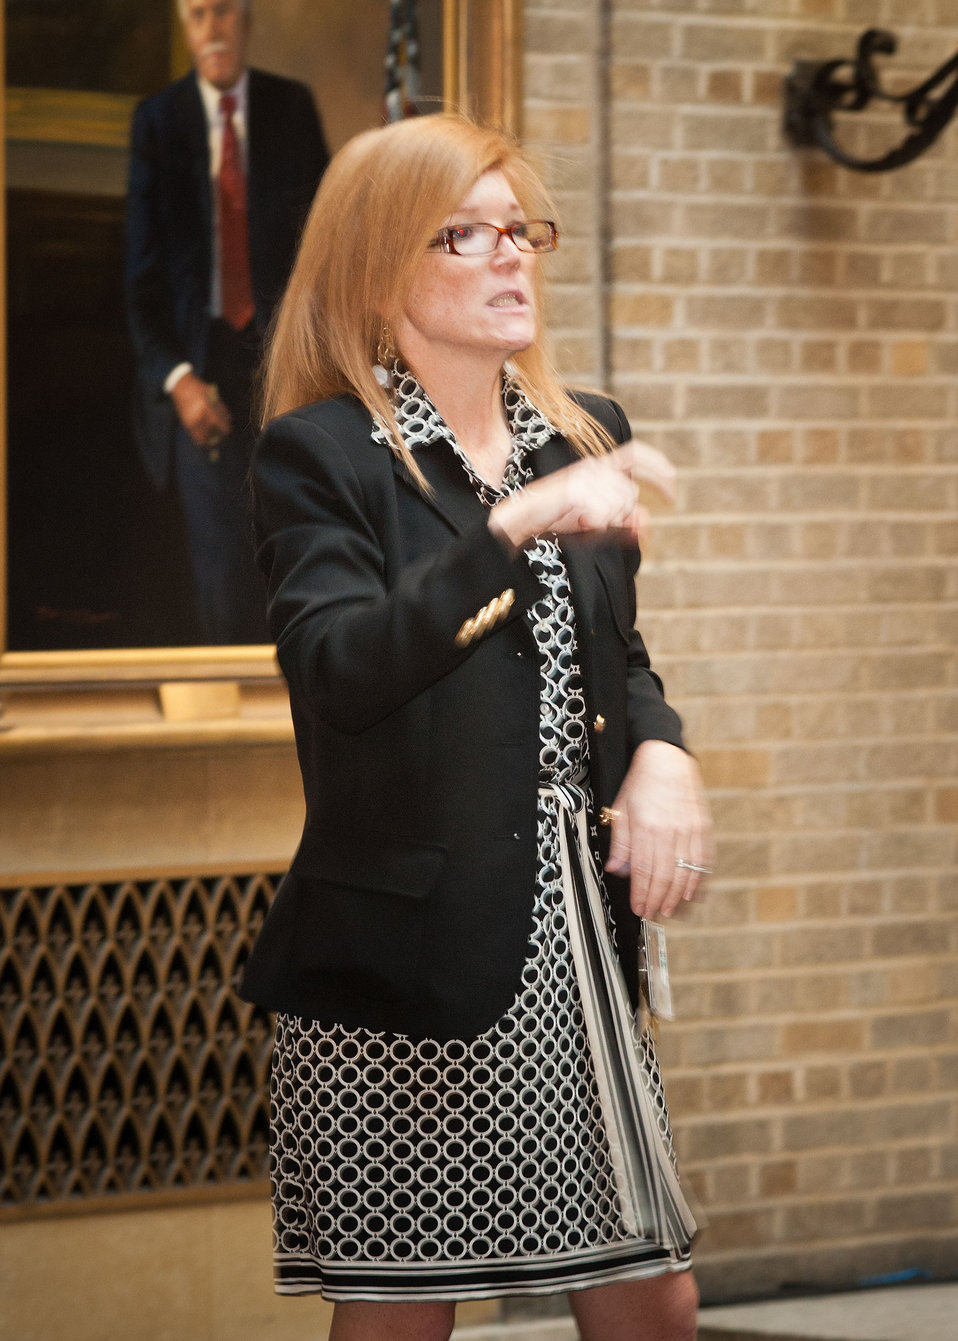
Interpreting Services Manager Nancy Frohman welcomes employees and guests to the U.S. Department of Agriculture (USDA) Departmental Management (DM) Target Center 20th Anniversary at USDA in Washington, D.C. on Thursday, Sept. 13, 2012. The USDA Target Center has provides Assistive Technology to employees with disabilities. The Center has assisted thousands of individuals with disabilities to further contribute to the mission of USDA. The Target Center has also partnered with the Department of Defense Computer/Electronic Accommodations Program (CAP).